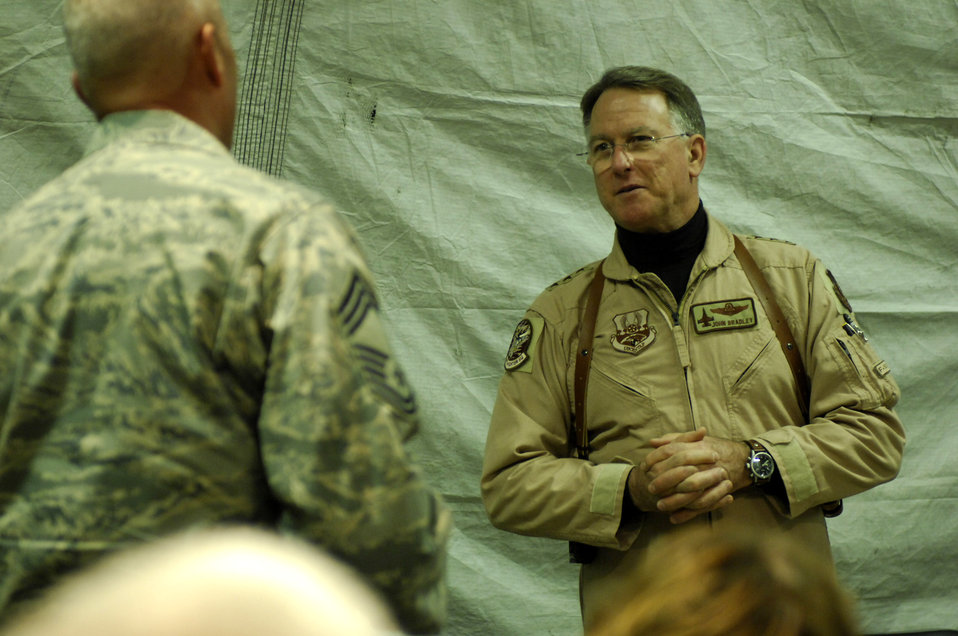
Reserve commander delivers holiday message to Airmen

Lt. Gen. John A. Bradley answers a question from Chief Master Sgt. Stanley Burrows Dec. 3 at Bagram Air Base, Afghanistan. General Bradley, the commander of Air Force Reserve Command, stopped here to visit with deployed Airmen, hear their concerns and thank them for their service. Chief Burrows is assigned to the 455th Expeditionary Security Forces Squadron.